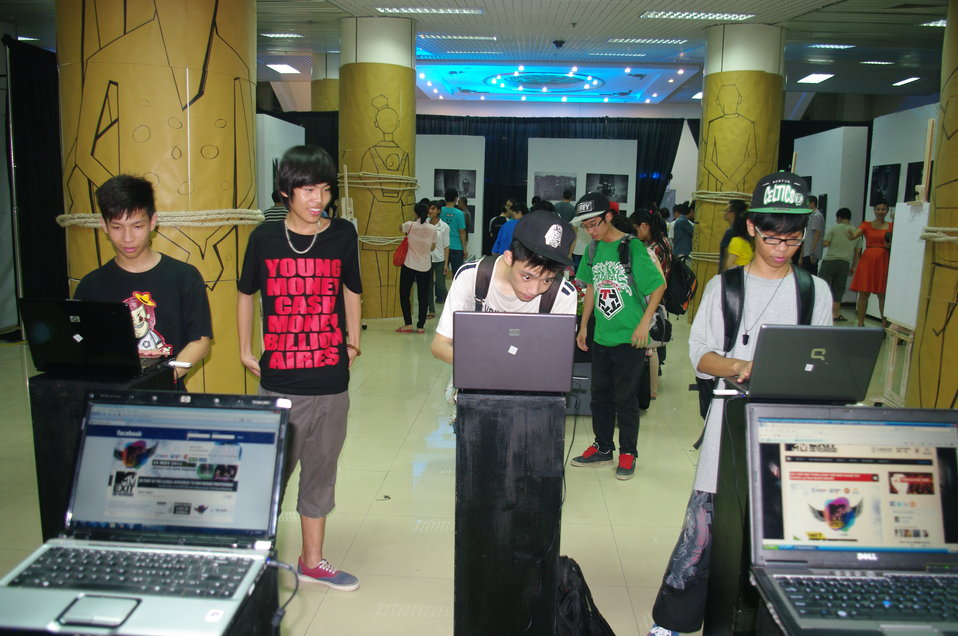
MTV EXIT opens Youth Forum in Hanoi